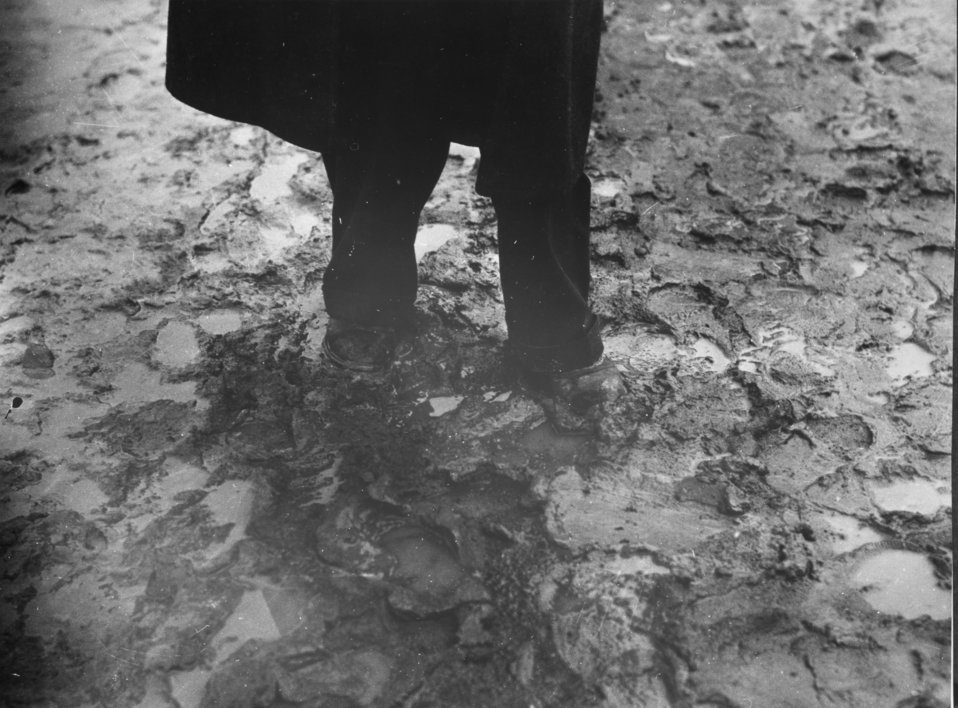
Daily Life at Oak Ridge